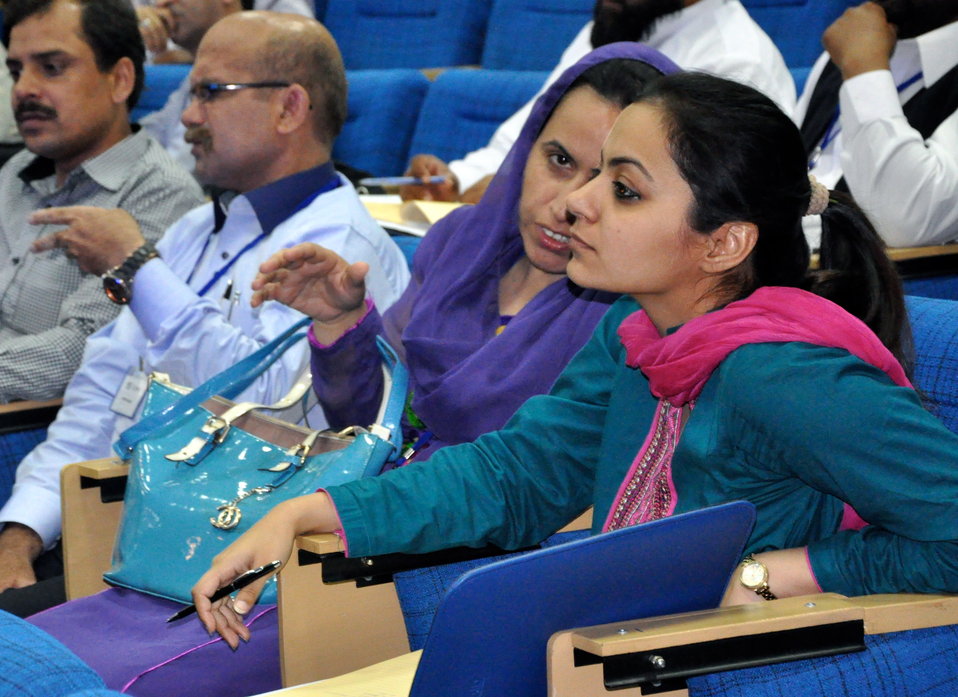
Participants discuss a point during the conference